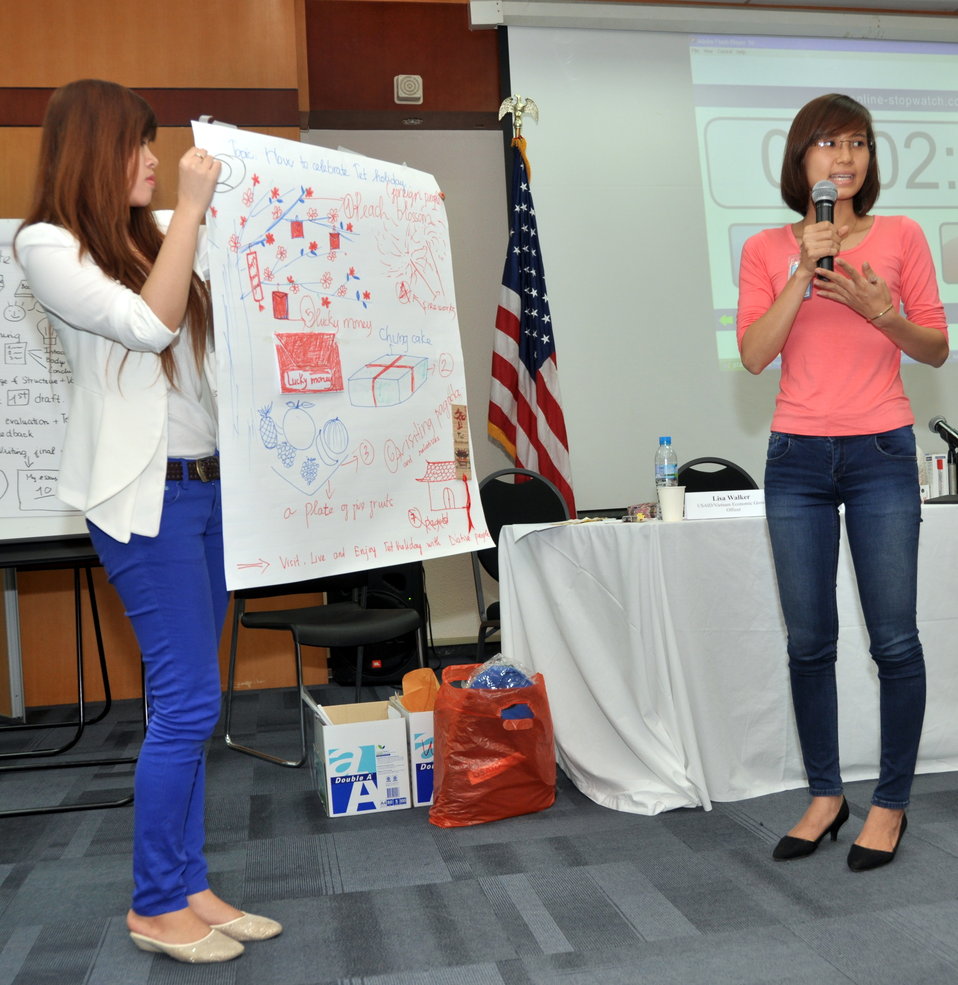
Students join the ‘USAID and Higher Education in Vietnam’ talk

Photo: @USAIDVietnam, November 19, 2012